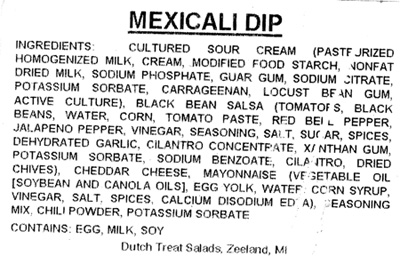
RECALLED – Mexicali Dip

November 1, 2013 – Product Recall – Dutch Treat Salads, LLC Voluntarily Recalls Mexicali Dip Due to Possible Health Risk.